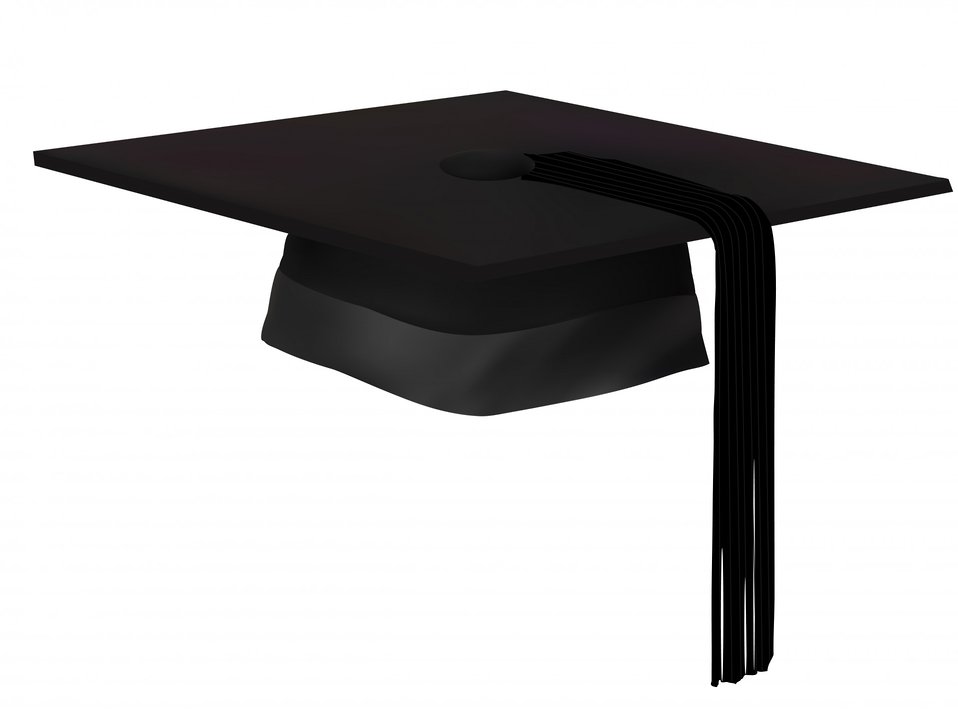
Mortar board graduate cap

Graduates cap mortar board isolated on white background clipart.